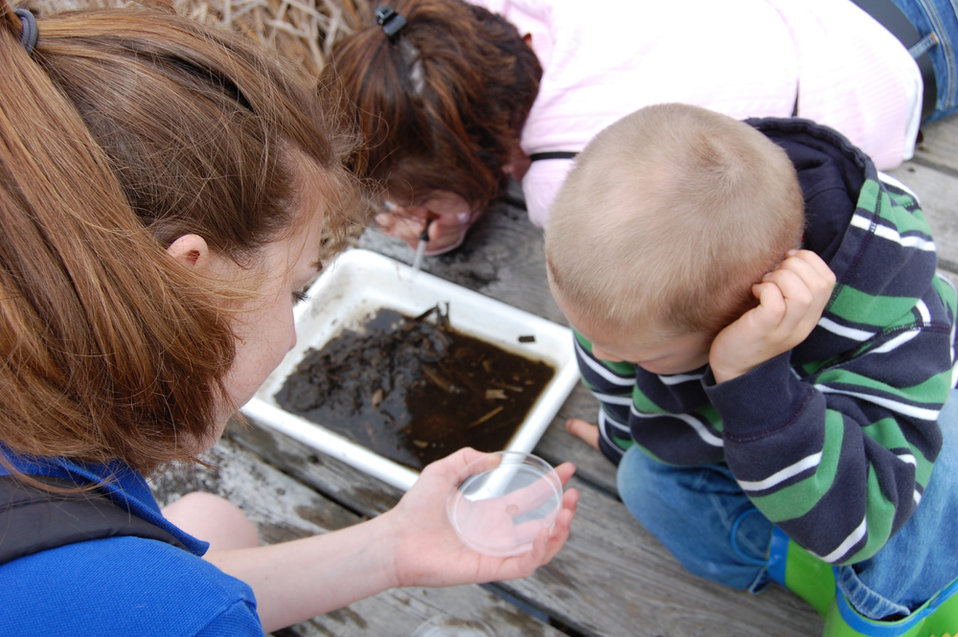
Sense of Wonder Camp

Sring 2009 session of the Sense of Wonder Camp, a camp for children ages 3-4 at Parker River National Wildlife Refuge.Credit: Kate Toniolo/USFWS